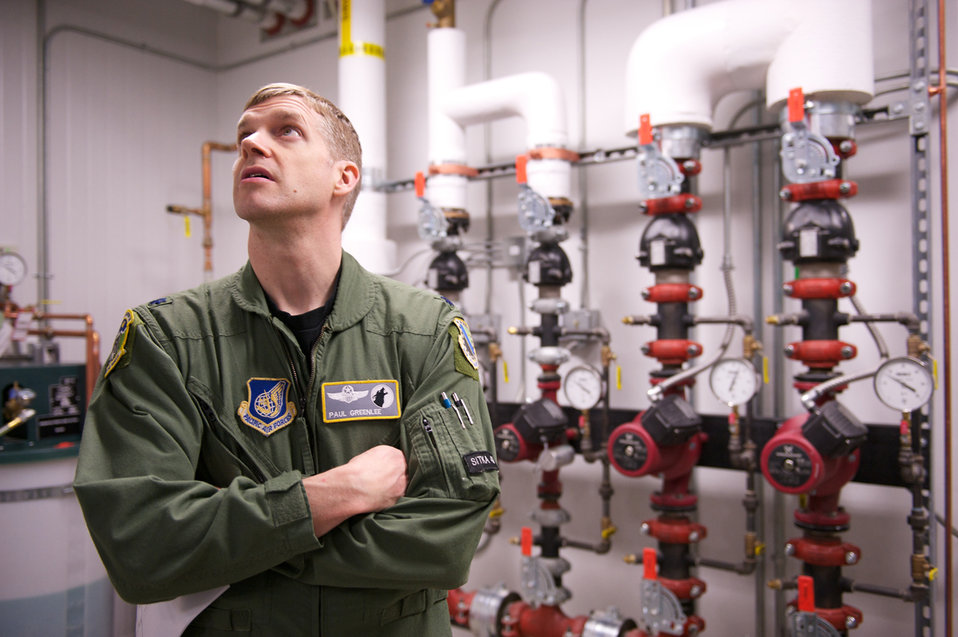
F-22 Raptor simulator comes to roost at JBER

JOINT BASE ELMENDORF-RICHARDSON, Alaska -- Air Force Lt. Col. Paul Greenlee, 3rd Operations Support Squadron director of operations, marvels March 31, at the mechanical room supporting the F-22 Raptor Full Mission Trainer at the Distributed Mission Operations Campus. The FMT requires precise regulation of its temperature and humidity.